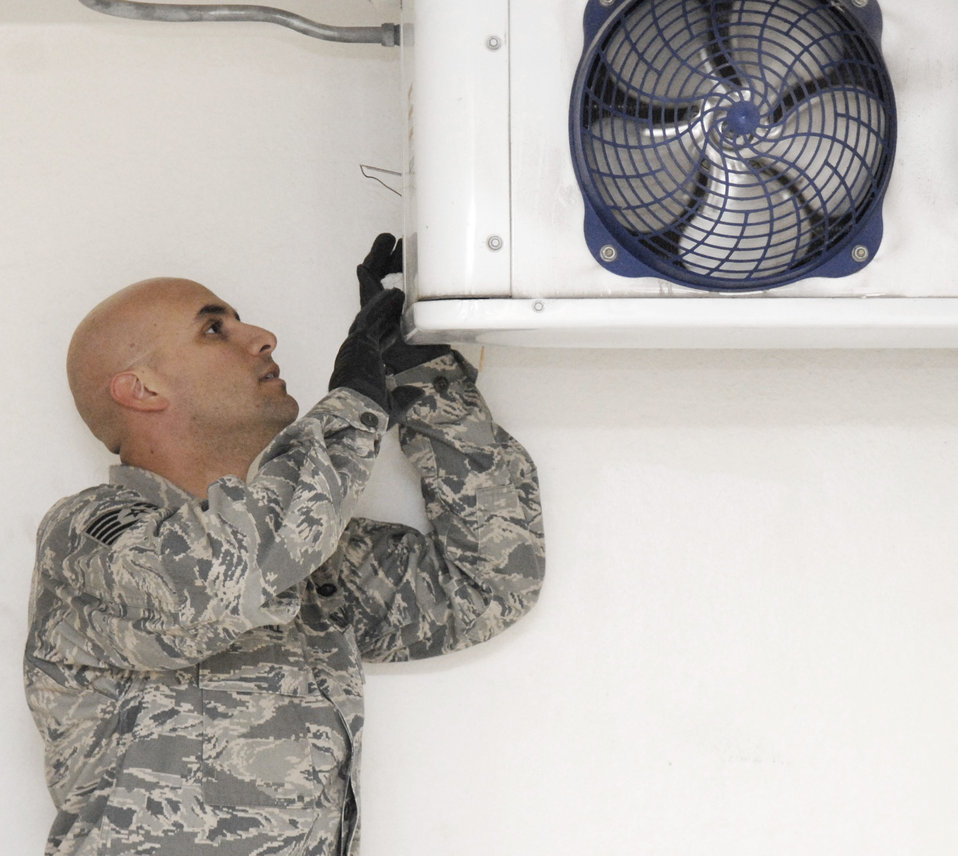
Airmen get fallen warriors home

Technical Sgt. Gabriel Martinez checks the temperature in a refrigeration unit used for holding remains of fallen warriors March 26 at an air base in Southwest Asia. Sergeant Martinez is the 379th Expeditionary Force Support Squadron NCO in charge of mortuary affairs.